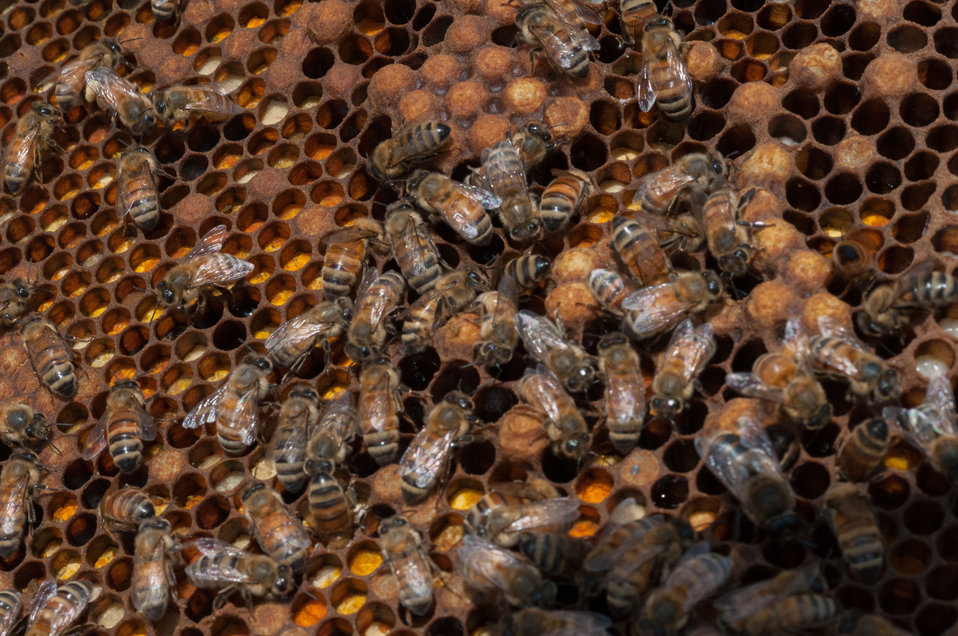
A hive of honey bees hard at work in the apiary atop the U.S.Department of Agriculture (USDA) Jamie Whitten building in Washington, D.C. on May, 22, 2013. Bees are one of nature’s many pollinators for flowers and crops and are crucial in production for fruits and vegetables. Some of the crops pollinated by bees are apples, squash, and almonds. Honeybees are responsible for pollinating approximately $15 billion worth of crops in the U. S. each year. The U. S. Department of Agriculture (USDA) Agricultural Research Service (ARS) and Natural Resource Conservation Service (NRCS) are working on ways to mitigate the decline of the bee population by coordinating pollination research, conservation, and education among USDA agencies and their partners.